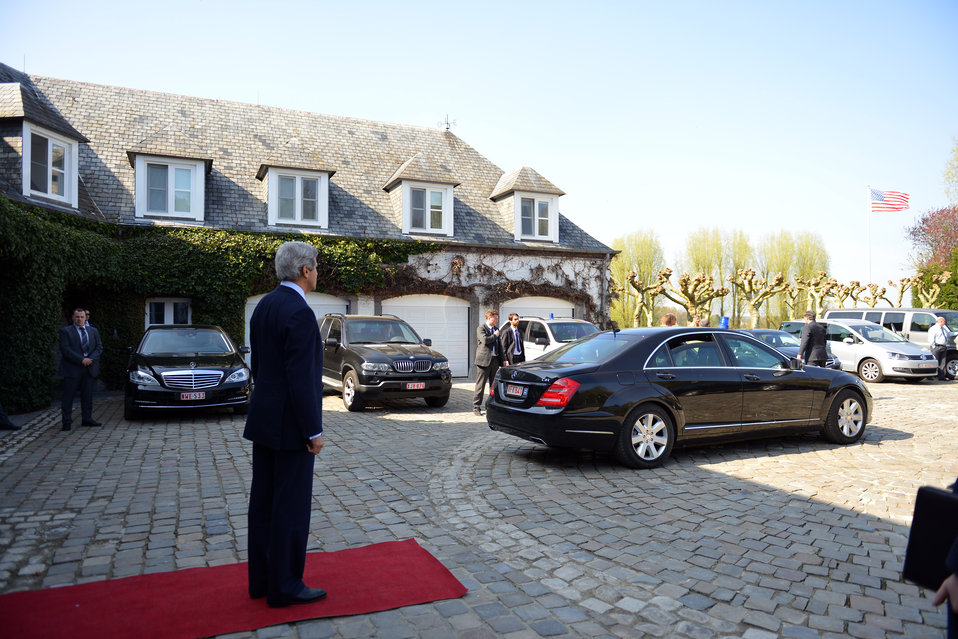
Secretary Kerry Watches the Pakistani Delegation Depart

U.S. Secretary of State John Kerry watches as the Pakistani delegation departs after their trilateral meeting with Afghan President Hamid Karzai in Brussels, Belgium, on April 24, 2013.